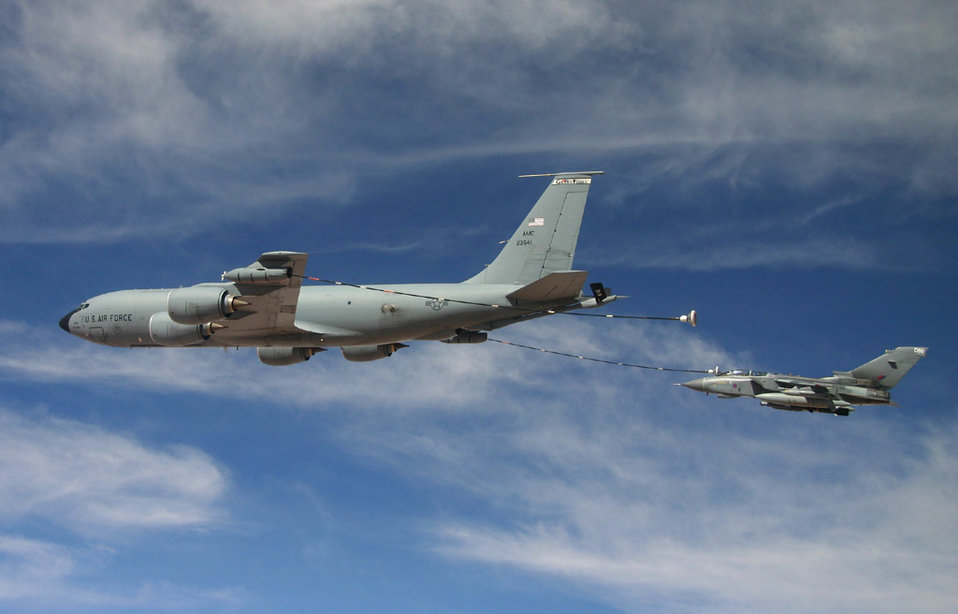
Multipoint refueling system

An Air Force KC-135 Stratotanker from the 340th Expeditionary Air Refueling Squadron refuels a Royal Air Force GR-4 Tornado over Iraq Feb. 25 using the multipoint refueling system. With MPRS, Air Force tankers have the versatility to refuel Air Force, Navy and coalition aircraft all in the same mission.